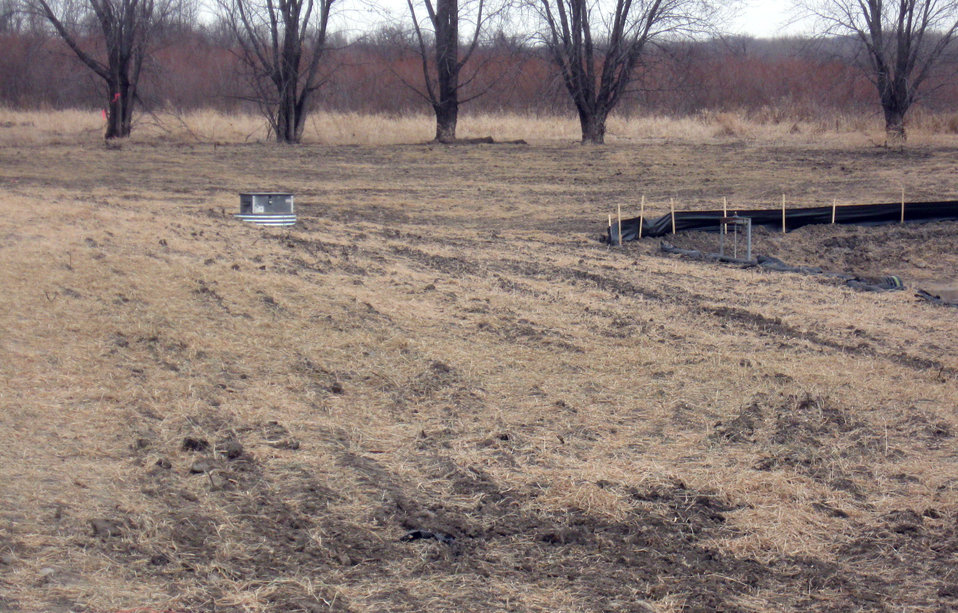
Restoration

After construction, the area was seeded and mulched.